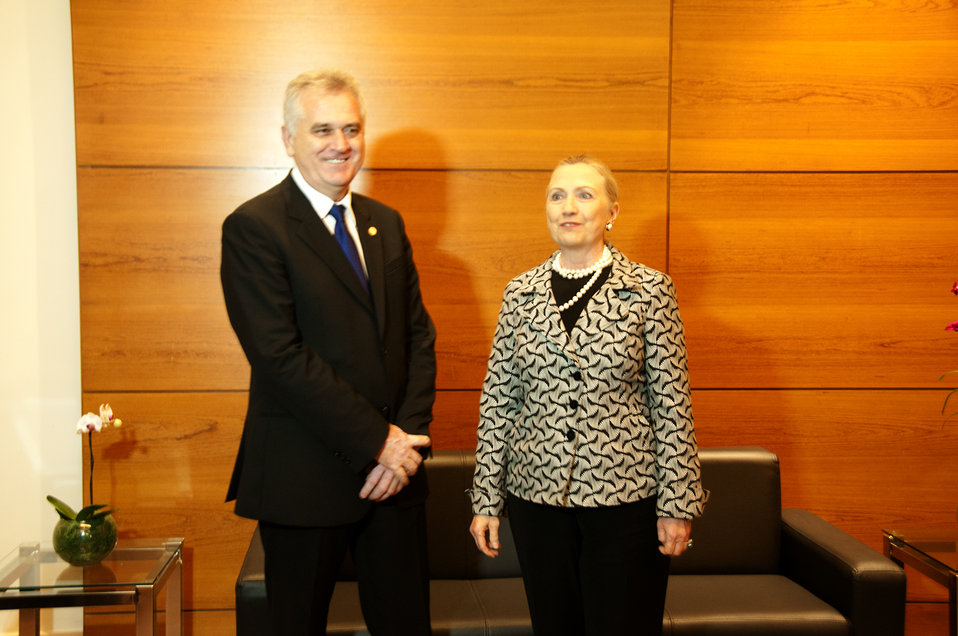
Secretary Clinton Poses for a Photo With Serbian President Nikolic

U.S. Secretary of State Hillary Rodham Clinton poses for a photo with Serbian President Tomislav Nikolic in Rio de Janeiro, Brazil during the Rio 20 Conference on June 22, 2012.